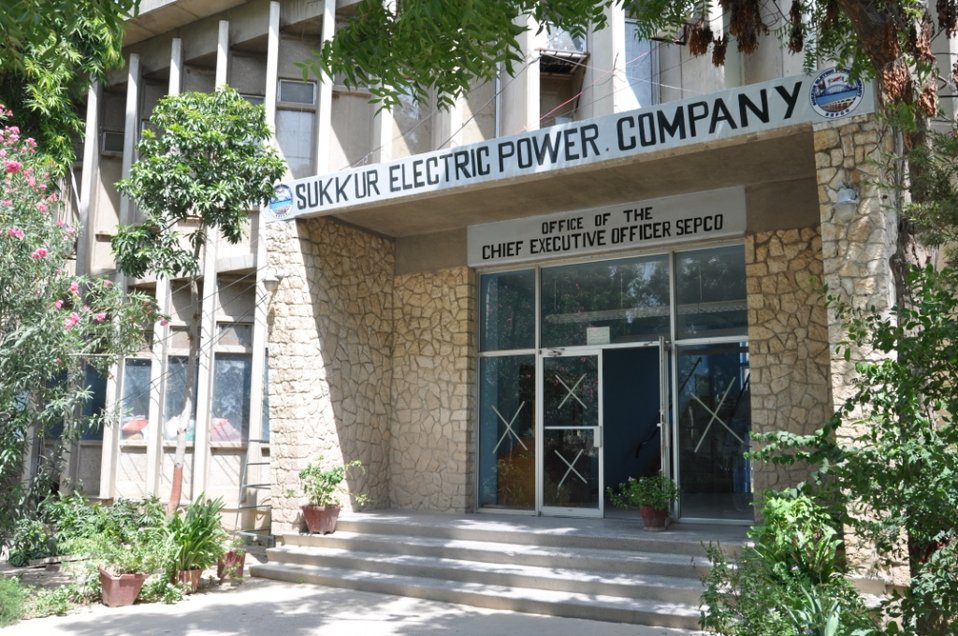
27 Sept, 2011 PDIP team visited SEPCO HQ to develop their website

A meeting was held on September 16th with the CEO and senior management of SEPCO, the recently licensed DISCO to discuss their needs and possible areas where Power Distribution Improvement Program can cooperate with the DISCO. In response to a request made by SEPCO at the meeting, Power Distribution Improvement Program sent a team to visit the SEPCO head office in Sukkur in order to develop their official website.